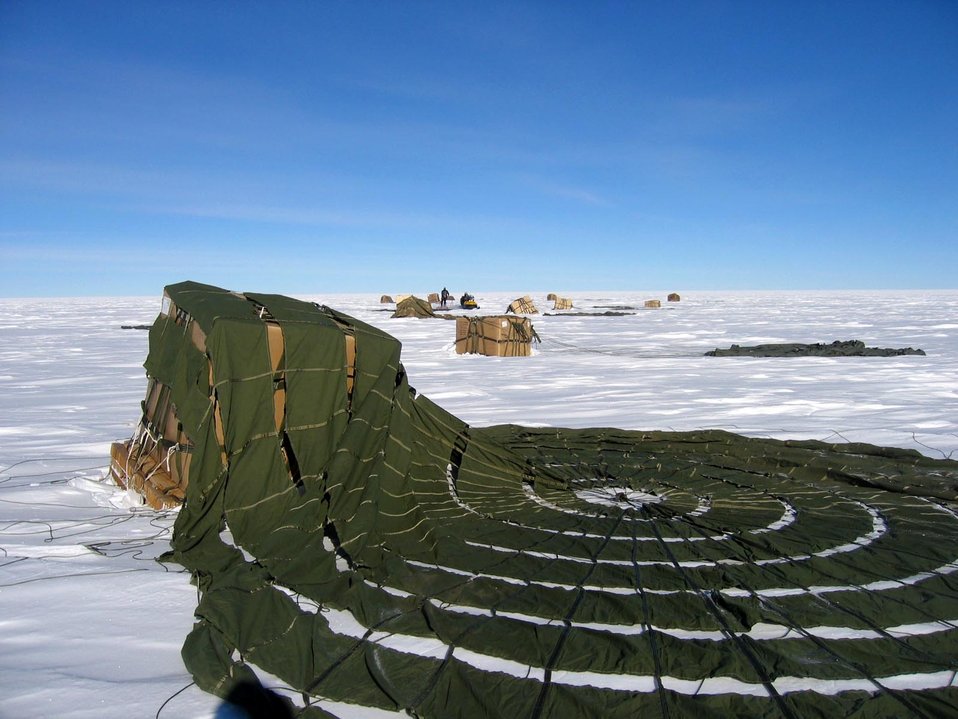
C-17 polar airdrop capability successful

Supplies airdropped by a McChord Air Force Base, Wash., C-17 Globemaster III land at a drop zone at the South Pole Dec. 18. By validating the C-17 capability to complete airdrop missions at the Geographical South Pole, Joint Task Force-Support Forces Antarctica demonstrated its ability to provide mid-winter emergency re-supply and flexible support to the National Science Foundation and U.S. Antarctica Program.